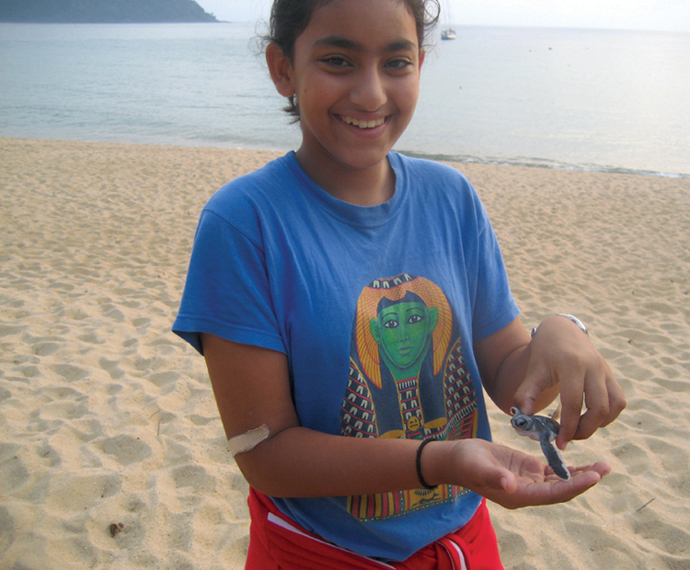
Uploaded by request of Joy Stevenson

Photo was taken in Tioman Island, Malaysia

On Tioman Island, United World College of South East Asia runs a hatchery for Hawksbill and Green turtles and has an overall hatching rate of 87%. The Grade 6 students support this hatchery by fundraising and while on Tioman they learn more about their habitat and upkeep and they release the turtles into the sea.